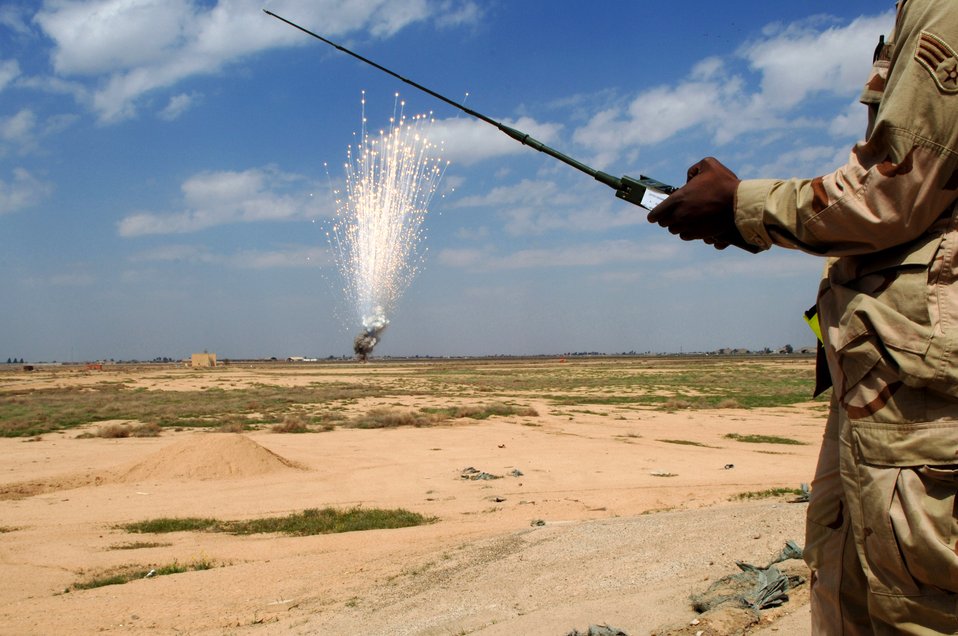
Ordnance disposal makes for no ordinary day

Airmen with the 332nd Expeditionary Civil Engineer Squadron's Explosive Ordnance Disposal Flight conduct a controlled detonation March 20 at Balad Air Base, Iraq. The Balad EOD periodically disposes of unserviceable, excess, or dangerous ordnance by fabricating explosive demolition charges in a controlled environment.